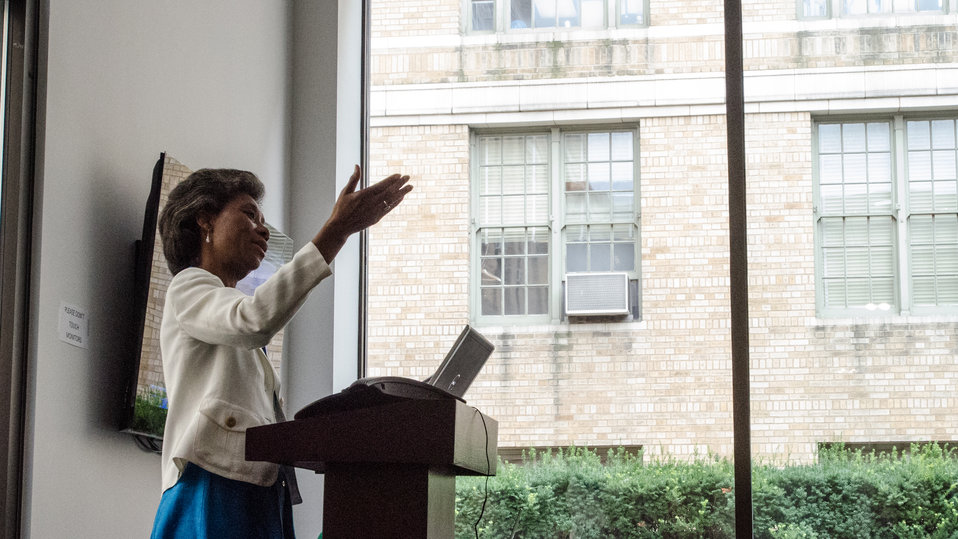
Sage Horizons Consulting Owner Cynthia Gibbs speaks at the U.S. Department of Agriculture’s (USDA) Rural Development (RD) 2nd Annual Cultural Transformation kickoff opening ceremony and forums, themed “Employees Influencing Change,” on Tuesday, Aug. 13, 2013, USDA in Washington, D.C.